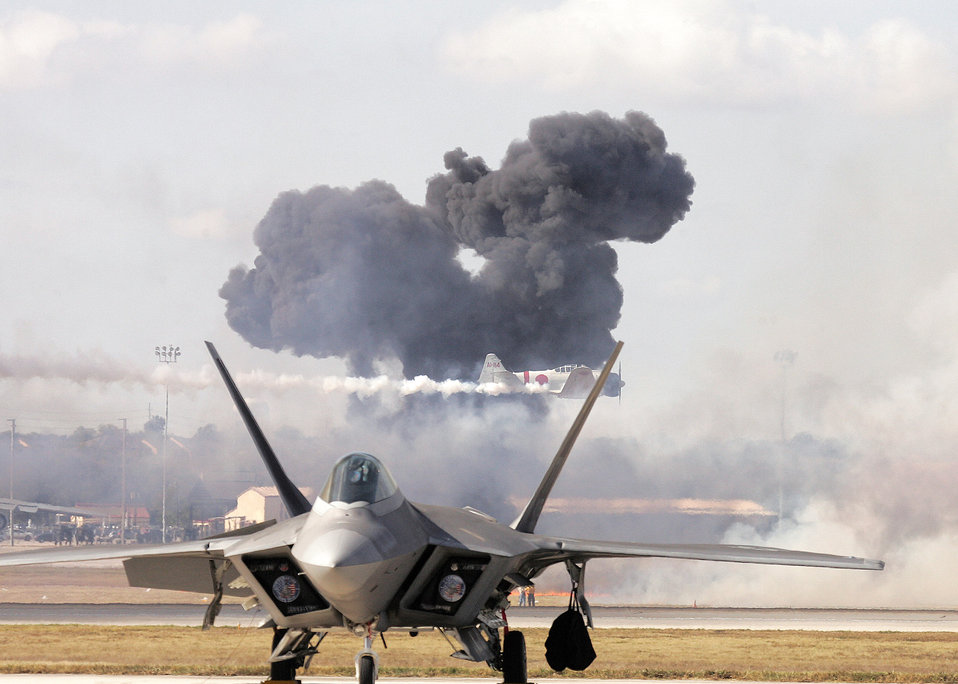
Under 'attack'

The Pearl Harbor reenactment of